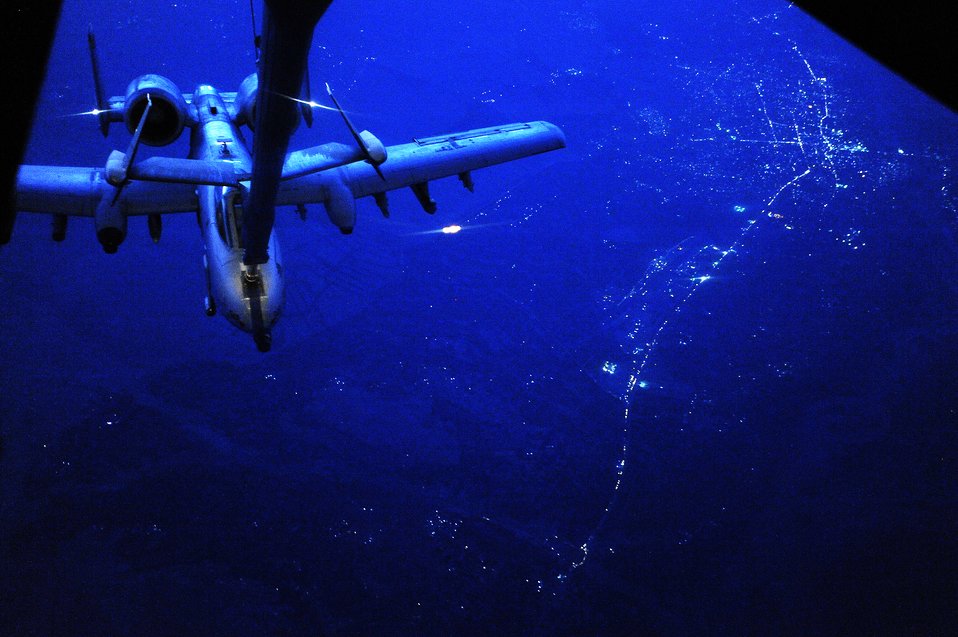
Night mission

Over Afghanistan, an A-10 Thunderbolt II receives fuel from a KC-10 Extender Oct. 5, 2009.